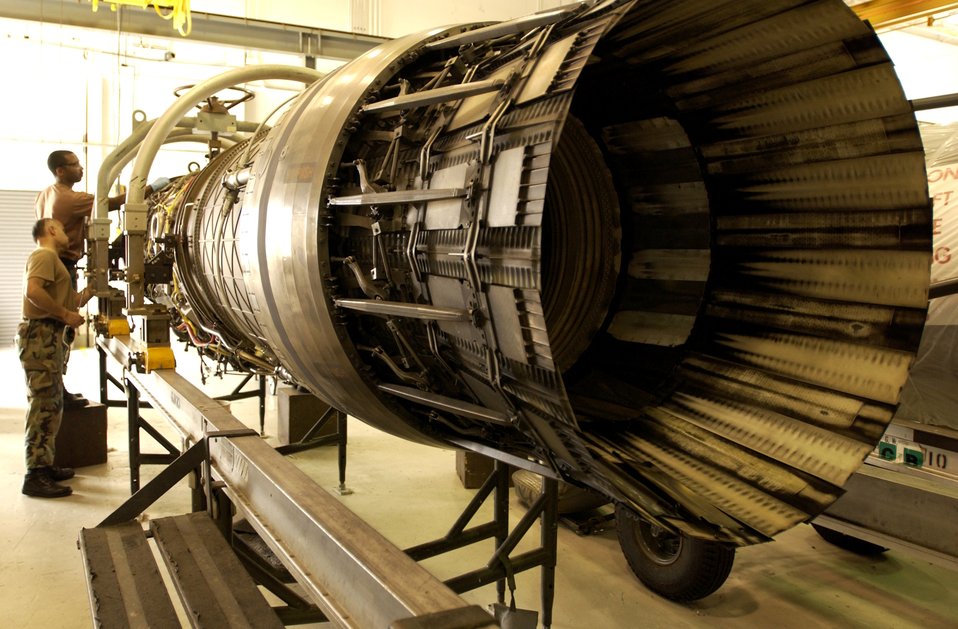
Repairing a FOD-damaged engine

Staff Sgt. Edwin Quinones (front) and Senior Airman Michael Nathan repair an F-15 Eagle engine on May 10, 2006 that was damaged by foreign object debris, known as FOD. Sergeant Quinones and Airman Nathan are aerospace propulsion technicians at the Florida Air National Guard's 125th Fighter Wing in Jacksonville.